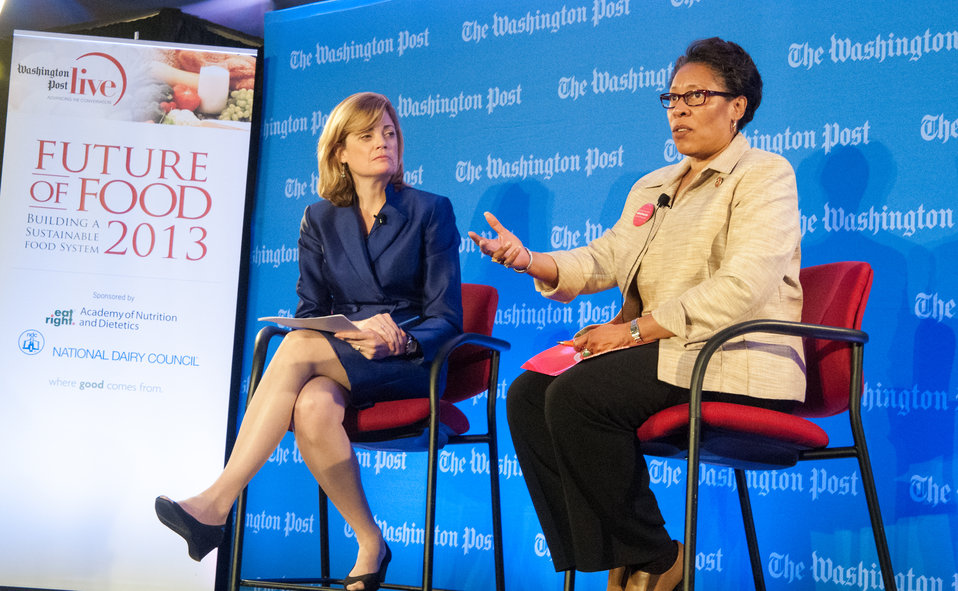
Washington Post Live Editor Mary Jordan and U.S. House of Representatives Committee on Agriculture member Congresswoman and an anti-hunger advocate Marcia Fudge (OH) along with Agriculture Secretary Tom Vilsack and leading agricultural and nutrition experts discuss expanding healthy, sustainable food systems during the annual live forum, “Future of Food: Building a Sustainable Food System 2013,” sponsored by the Washington Post in Washington, D.C. on Wednesday, May 22, 2013. The discussion included public-private partnerships, the market’s role in nutrition and the future of agricultural innovation.